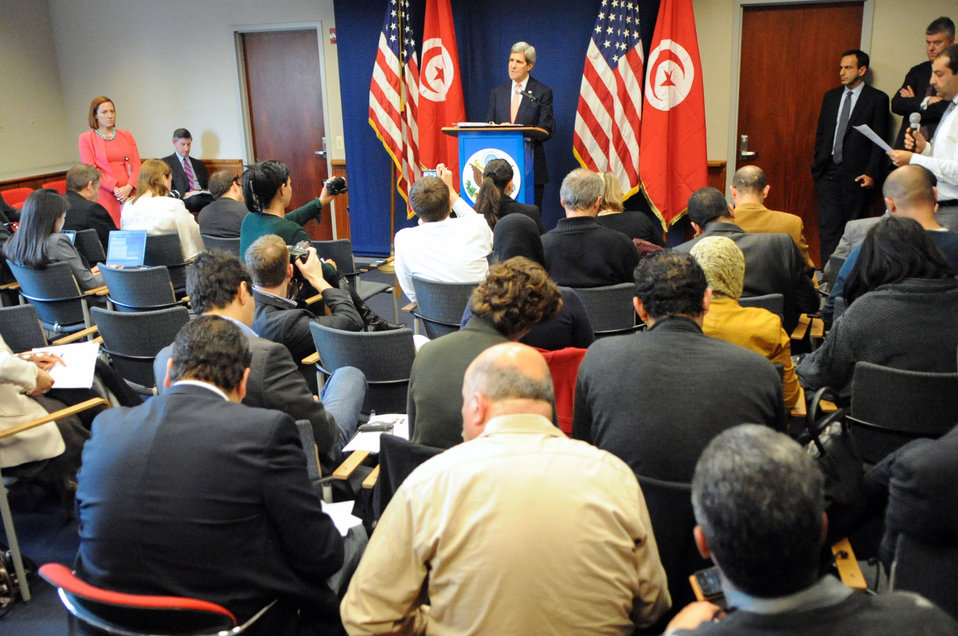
Secretary Kerry Addresses U.S., Tunisian Reporters at New Conference

U.S. Secretary of State John Kerry addresses U.S. and Tunisian reporters during a news conference at the U.S. Embassy in Tunis, Tunisia, on Feb. 18, 2014.